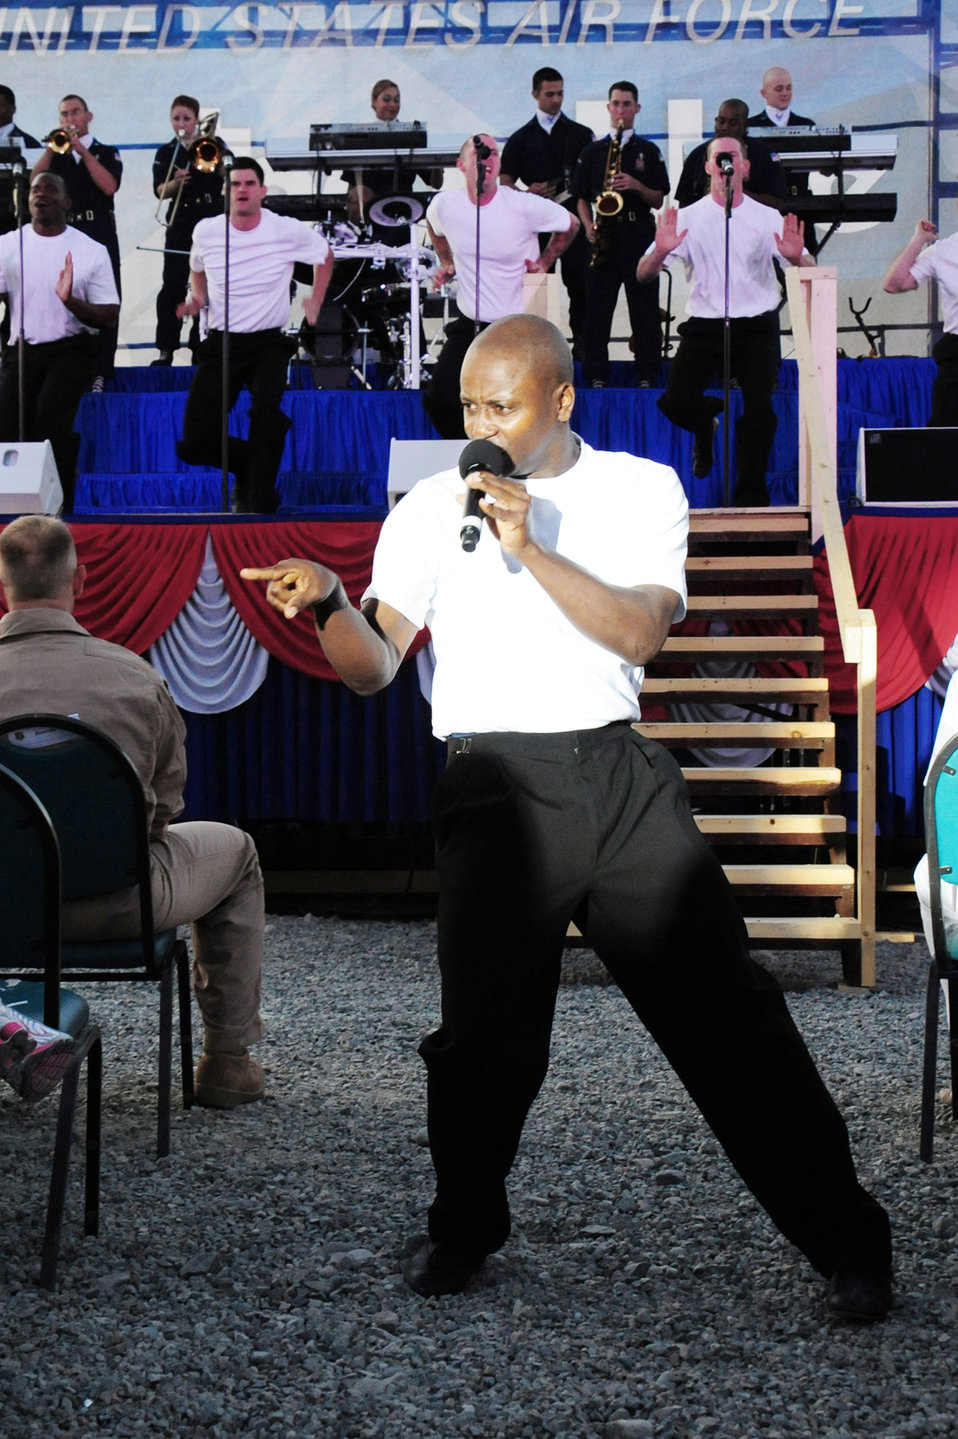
Tops In Blue entertain deployed forces in Kyrgyzstan

Tech. Sgt. Octavious Hill sings to the crowd during a performance July 9 at Manas Air Base, Kyrgyzstan. Sergeant Hill is a 99th Civil Engineer Squadron ventilation and refrigeration craftsman stationed at Nellis Air Force Base, Nev., and hails from Opelika, Ala.